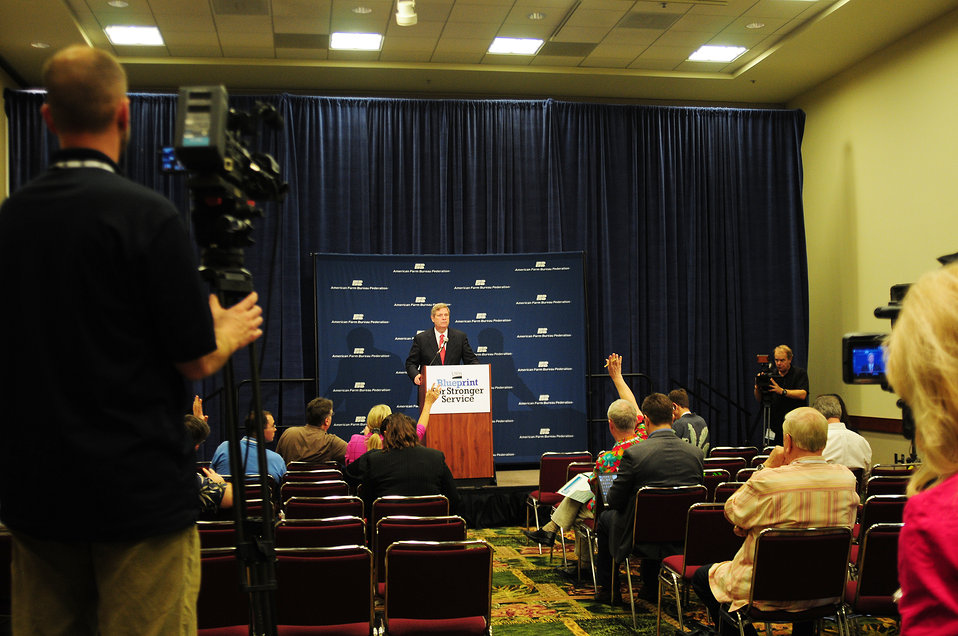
Agriculture Secretary Tom Vilsack presents USDA's Blueprint for Stronger Service, a plan to Increase Efficiency in USDA Operations, on Monday, January 9, 2012 in Honolulu, Hawaii.